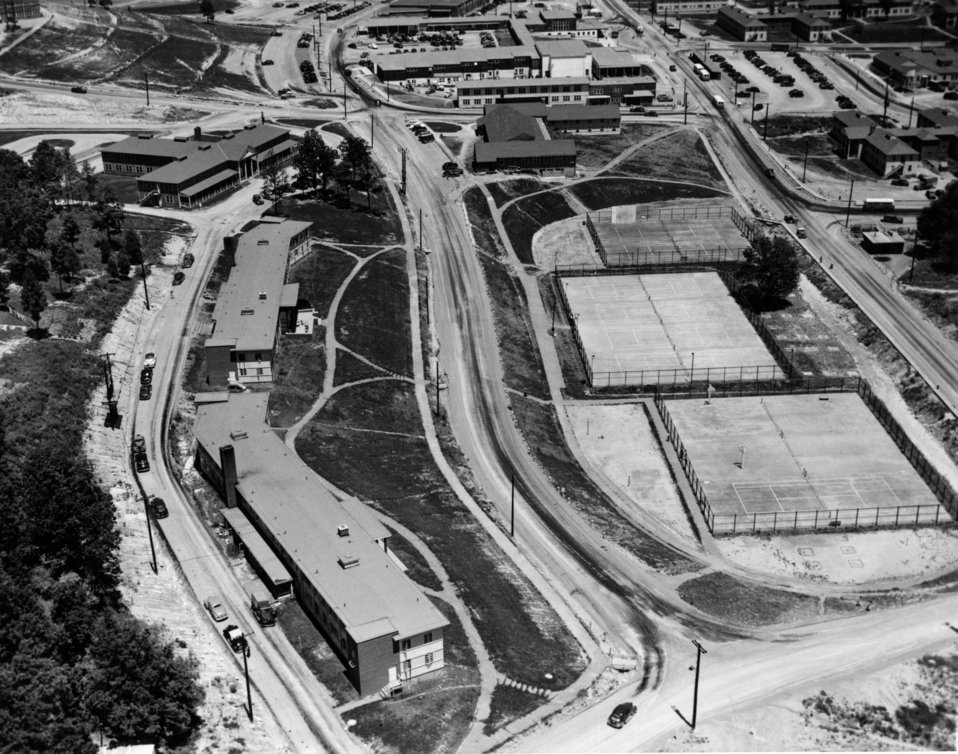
Aerial of Oak Ridge